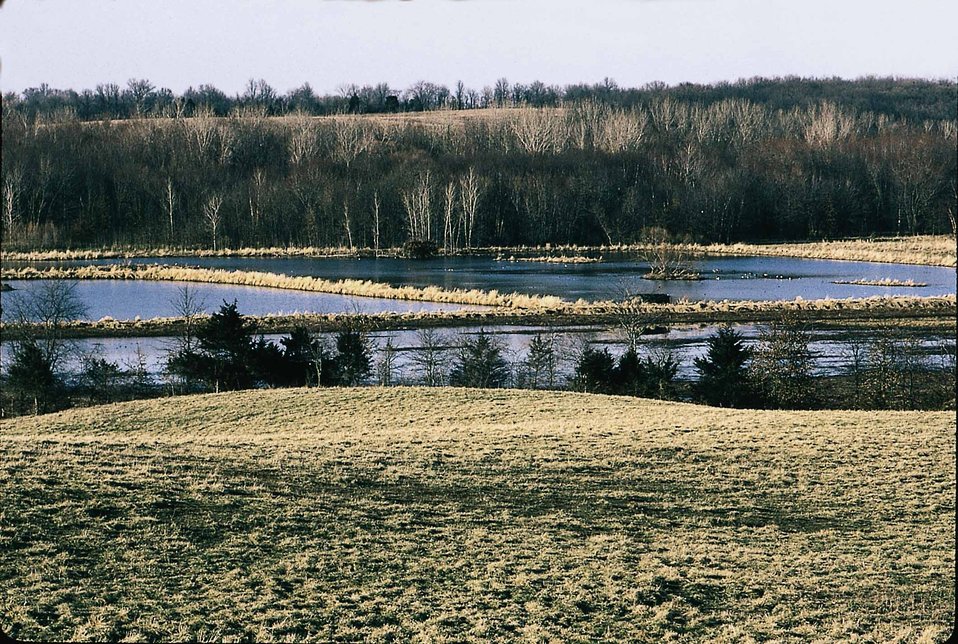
Habitat for ducks and geese on a restored wetland in Van Buren County, Iowa.